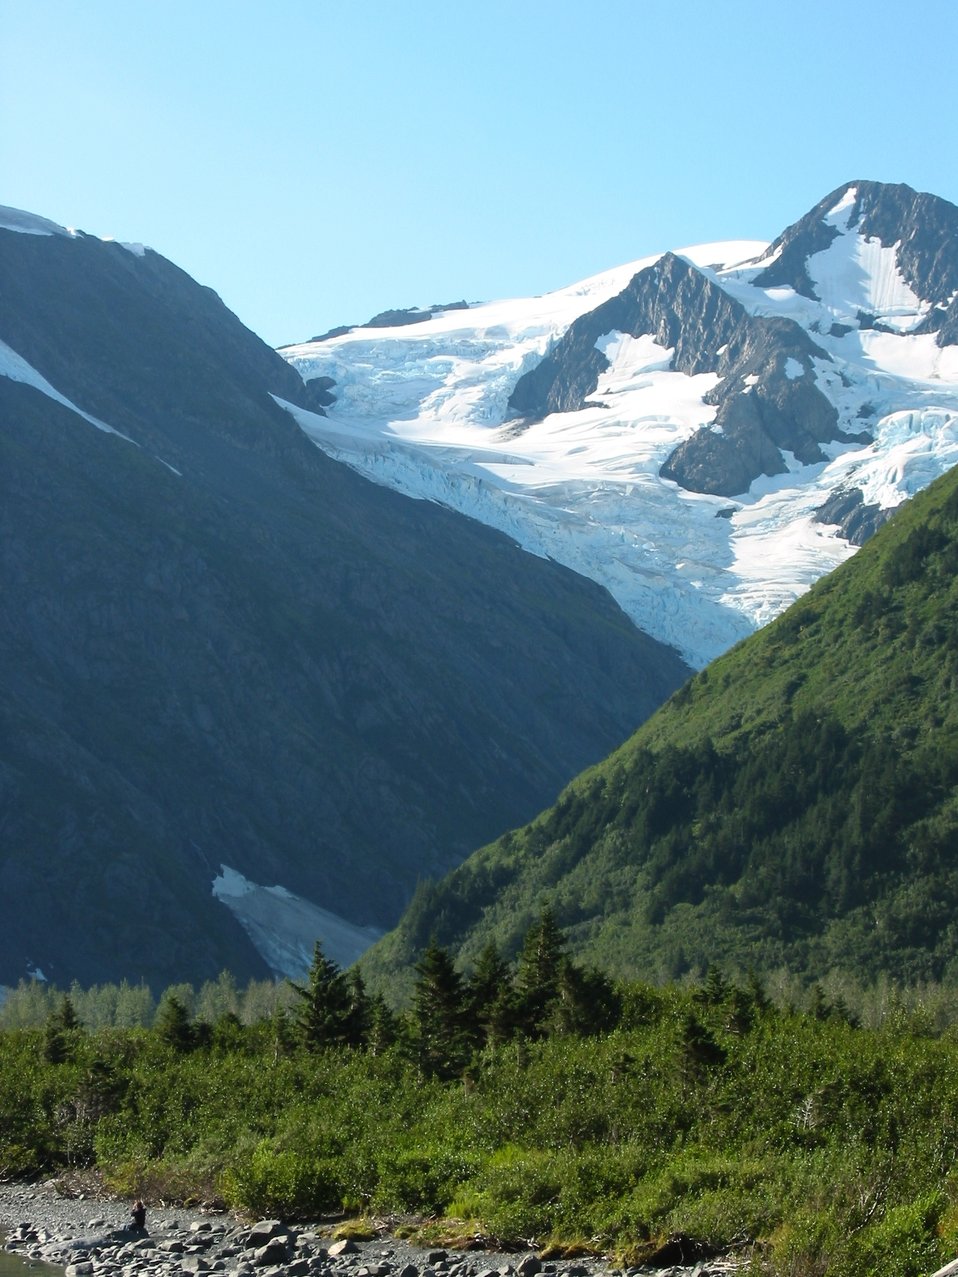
Mountains, ice, and evergreens.